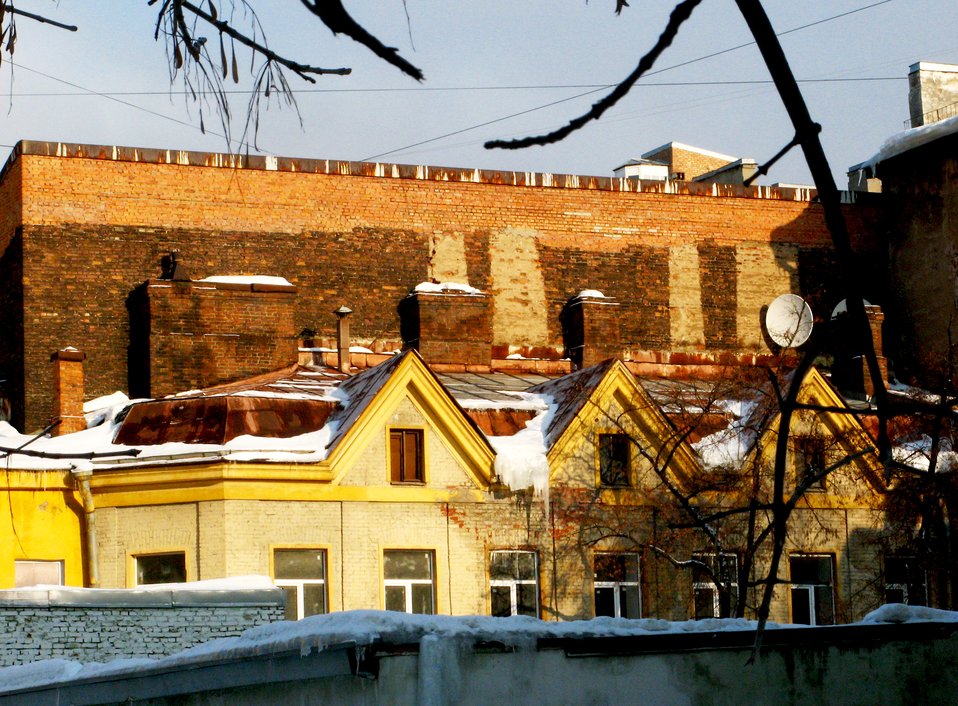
Русский: 13-линия, д. 26 и 28, В.О., Санкт-Петербург, Россия. Building number 26 and 28, 15-line, Vasilievsky Island, Saint-Petersburg, Russia.